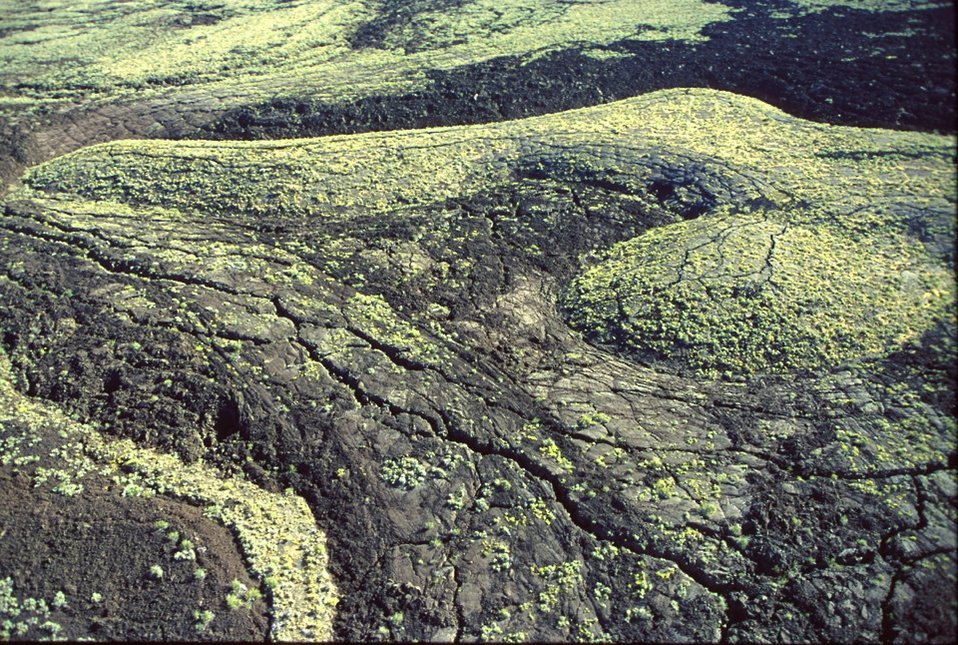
Craters of the Moon National Monument Shoshone Field Office USRD Upper Snake River District